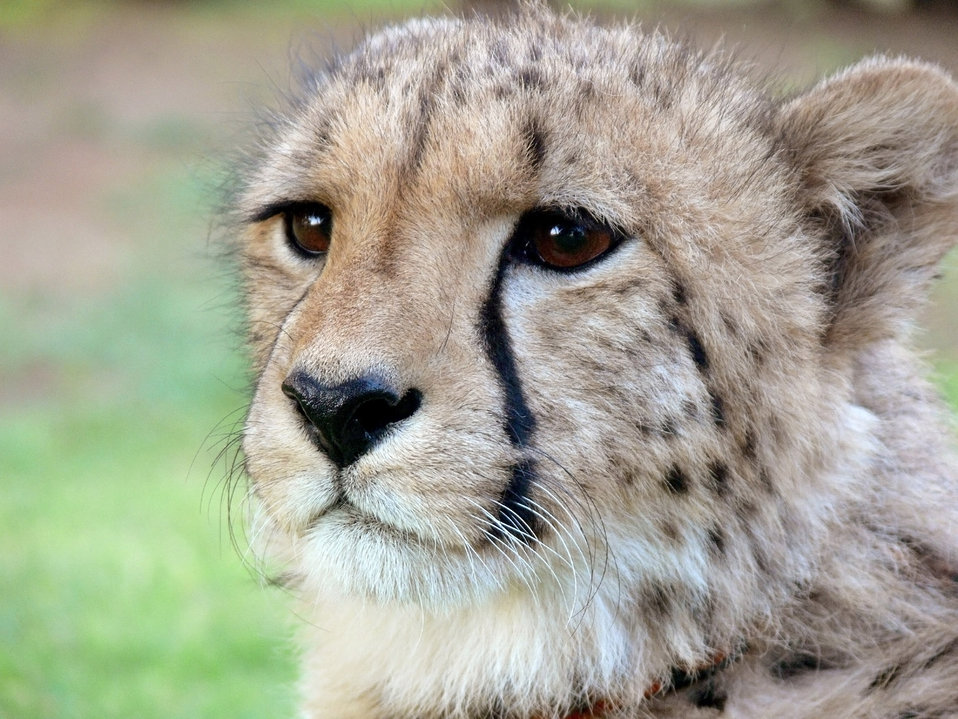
Cheetah half profile

Young male cheetah in half profile.